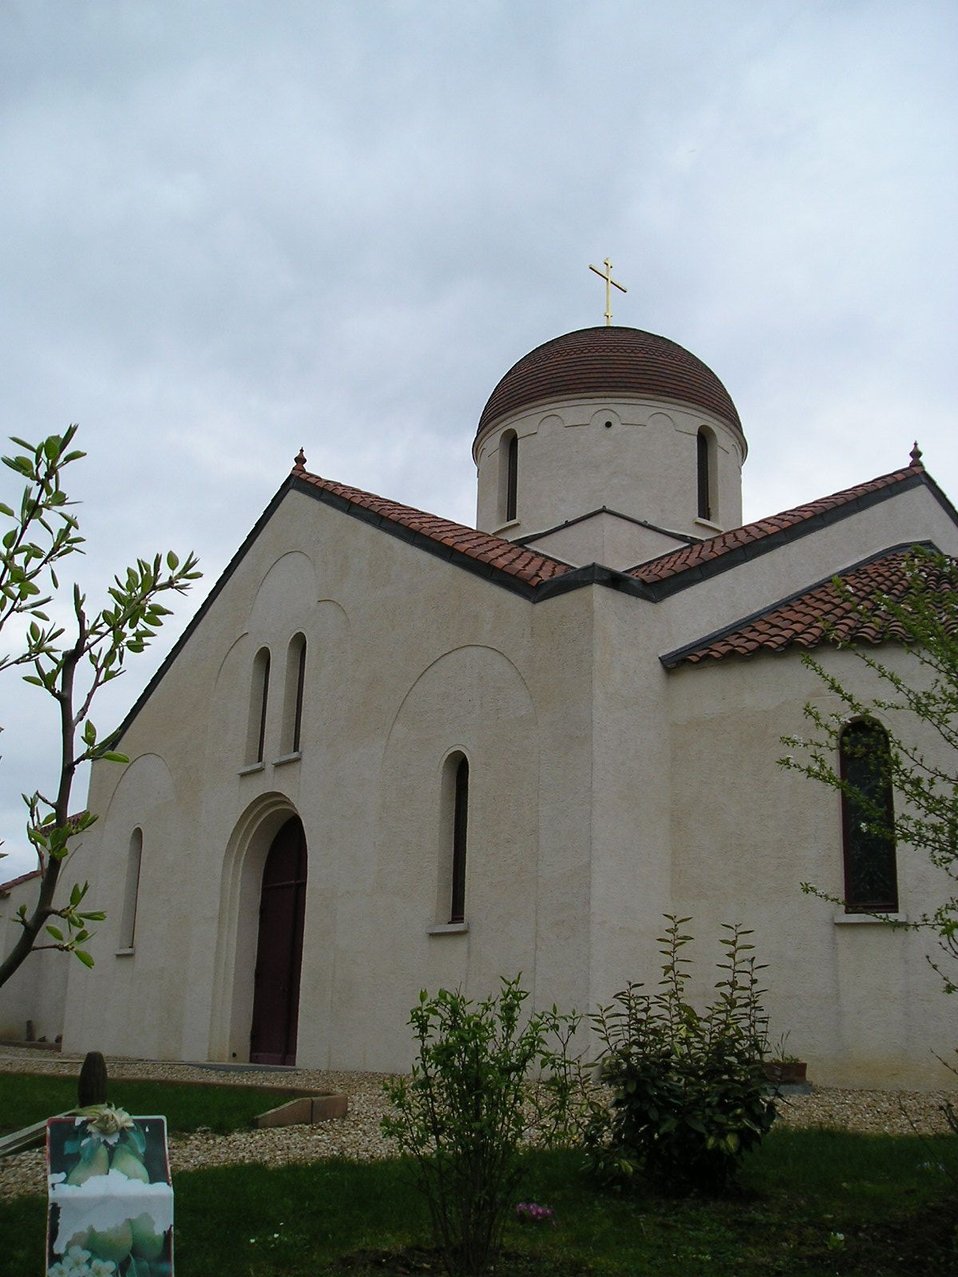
Fran√ßais†: Monast√®re orthodoxe de Bussy-en-Othe